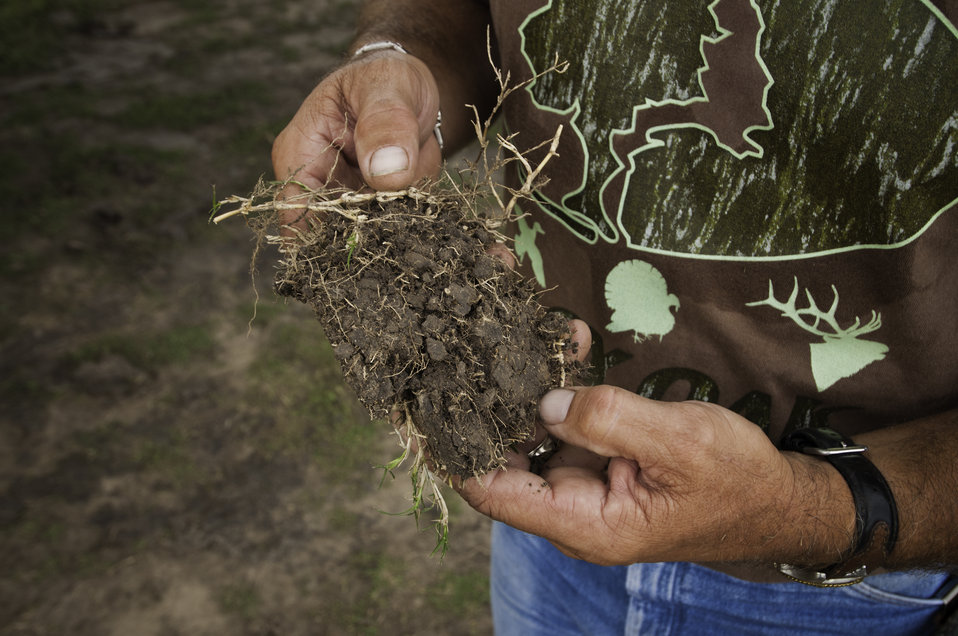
Quality Turf Farms owner Boston Brown checks the quality of the roots of the sod harvested on his turf farm in Guy, TX on Aug. 23, 2013.